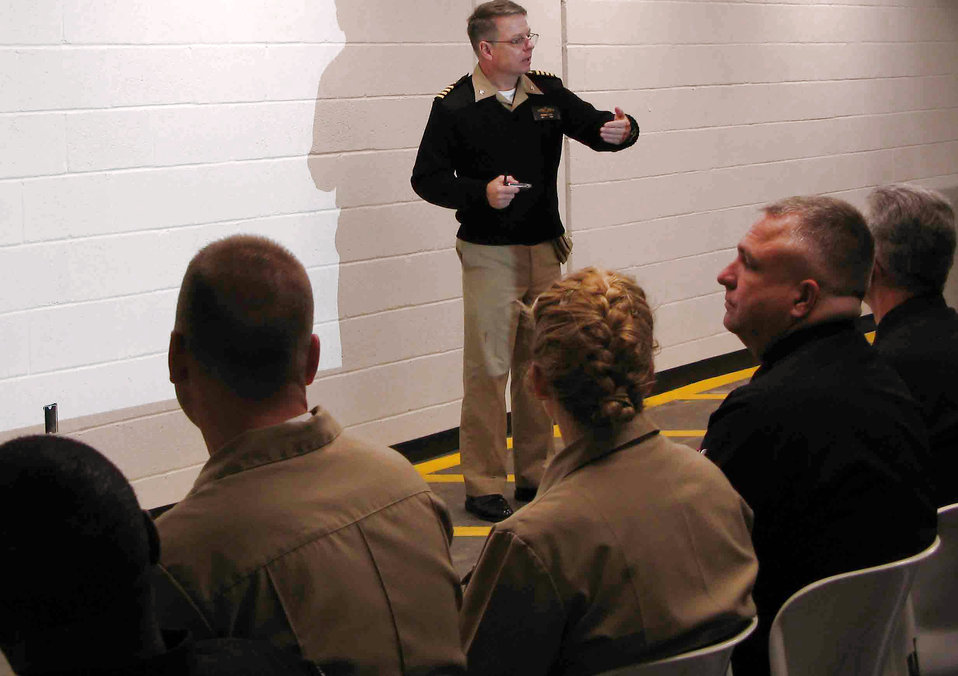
Inaugural committee prepares to welcome new president

Navy Capt. Benjamin Yates talks to the Armed Forces Inaugural Committee during an in-processing briefing of new committee members Nov. 5 in Washington, D.C. The committee is made up of servicemembers from the Army, Navy, Marine Corps, Air Force and Coast Guard. Captain Yates is the committee's director of personnel.